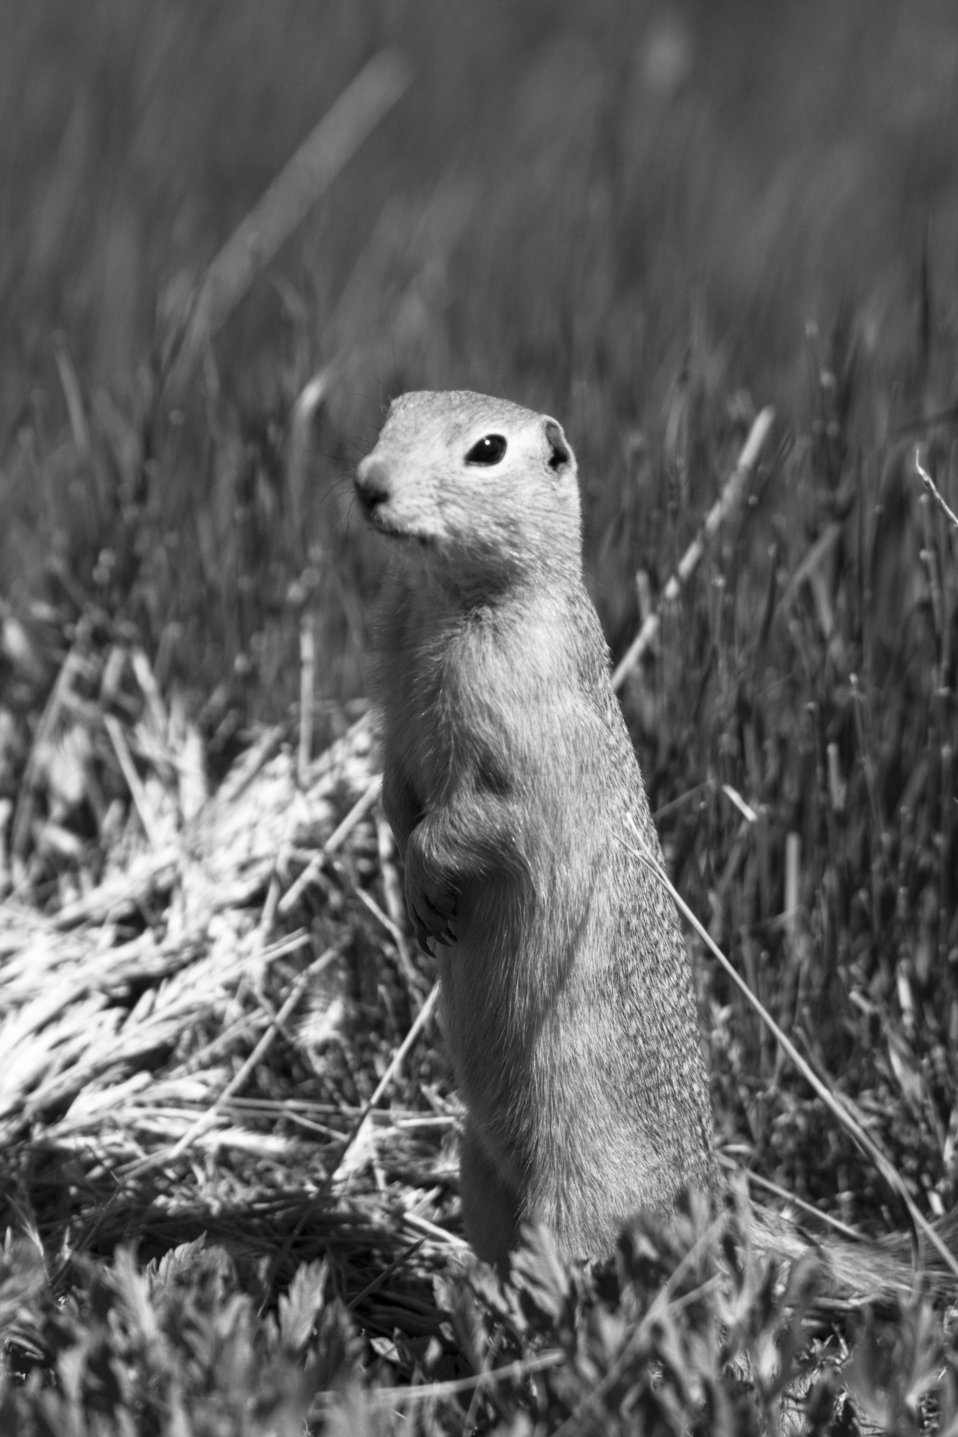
Gopher at Medicine Lake NWR

Steward of the Prairie - The intrepid gopher, after great interconnected expanses of soil fungi, or swarms of insects, large Gopher populations inhabit this prairie.

Location: Medicine Lake NWR

Credit: Jamieson Scott / USFWS

Photo Contest Entry #23